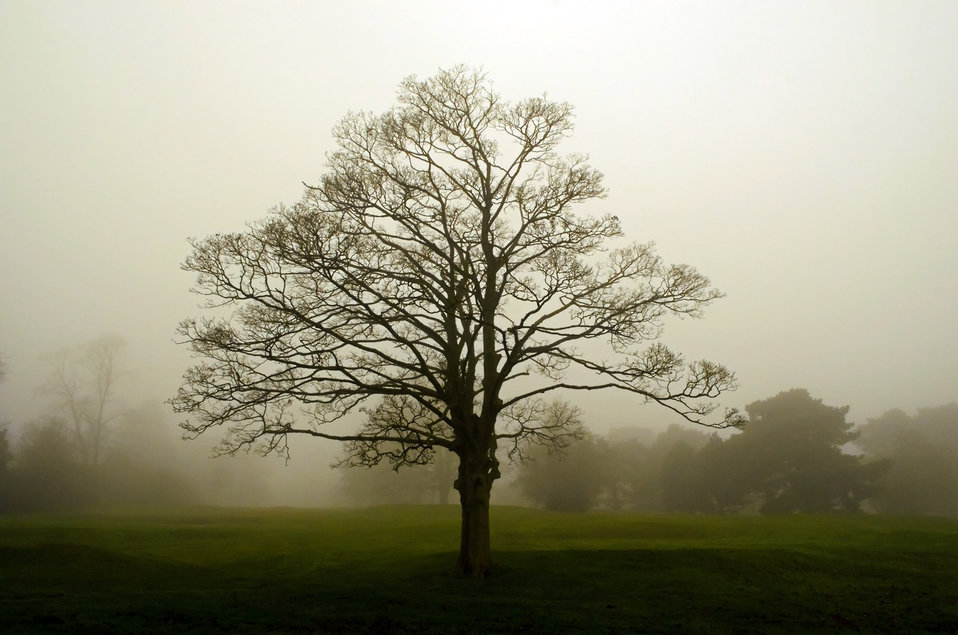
Fog - landscape.